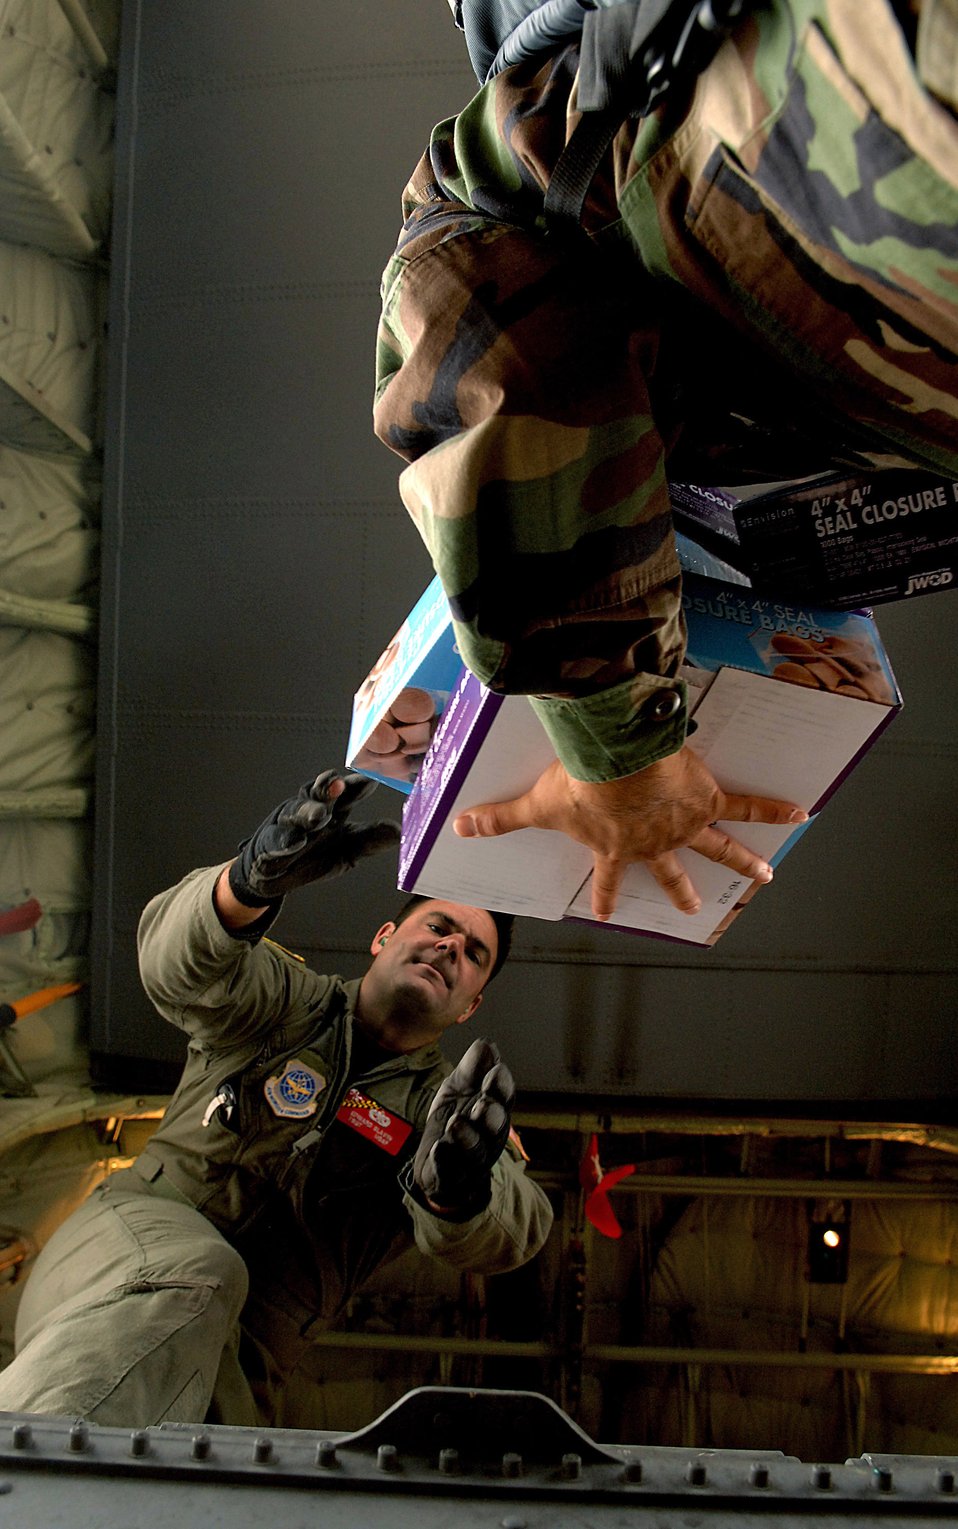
Help is on the way

Airmen unload medical relief supplies Aug. 20 from a C-130 Hercules in Pisco, Peru. They are delivering relief supplies and humanitarian aid to western Peru in the aftermath of an earthquake that struck the area Aug. 15.